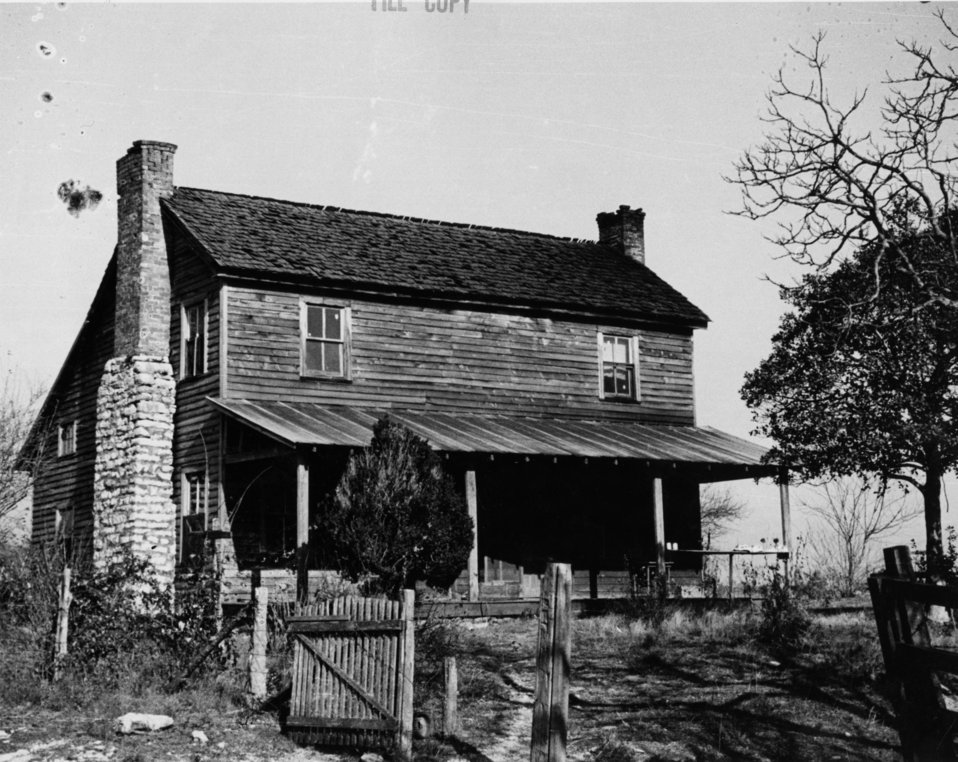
Early settlers at Oak Ridge